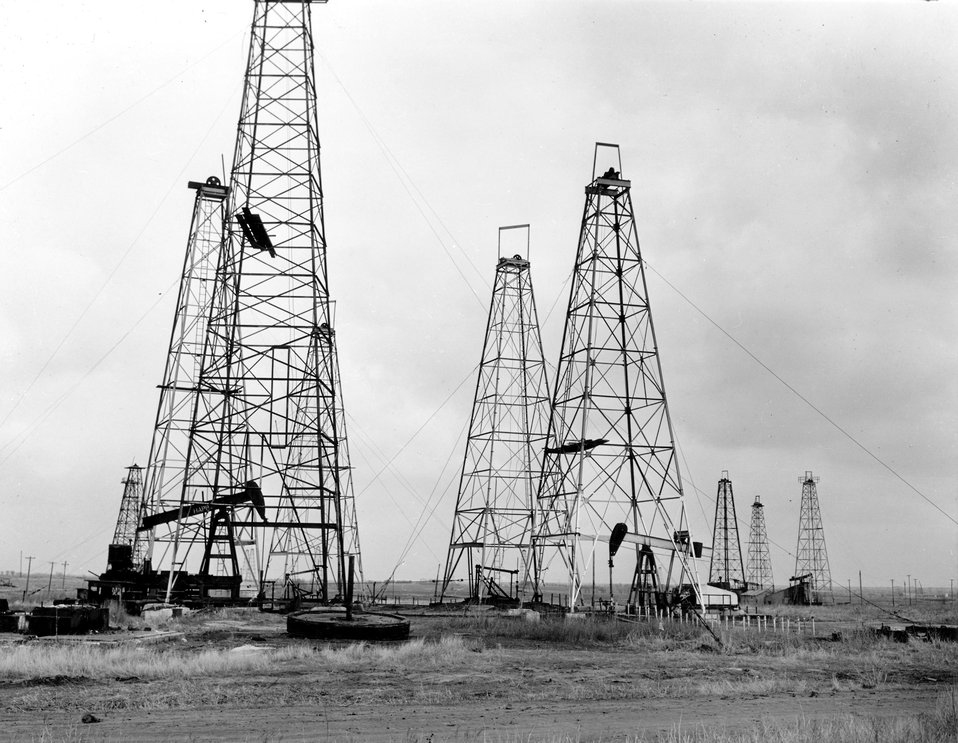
Standard Oil Co. Near Pawee, Oklahoma. Oil wells drilled close together without a spacing plan. c. undated